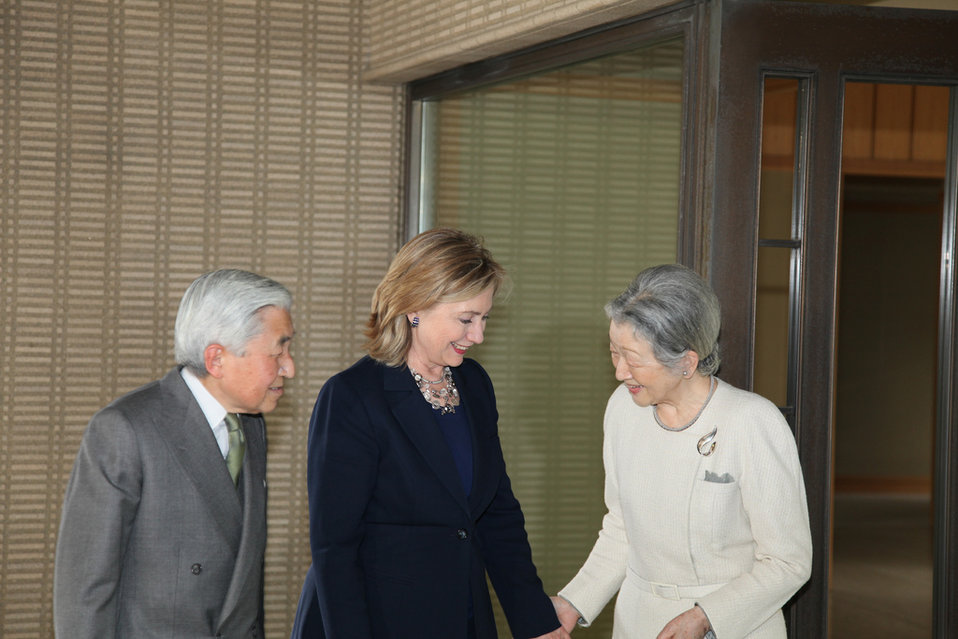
Secretary Clinton Visits Emperor Akihito and Empress Michiko

U.S. Secretary of State Hillary Rodham Clinton visits Emperor Akihito and Empress Michiko at the Imperial Palace in Tokyo, Japan, on April 17, 2011